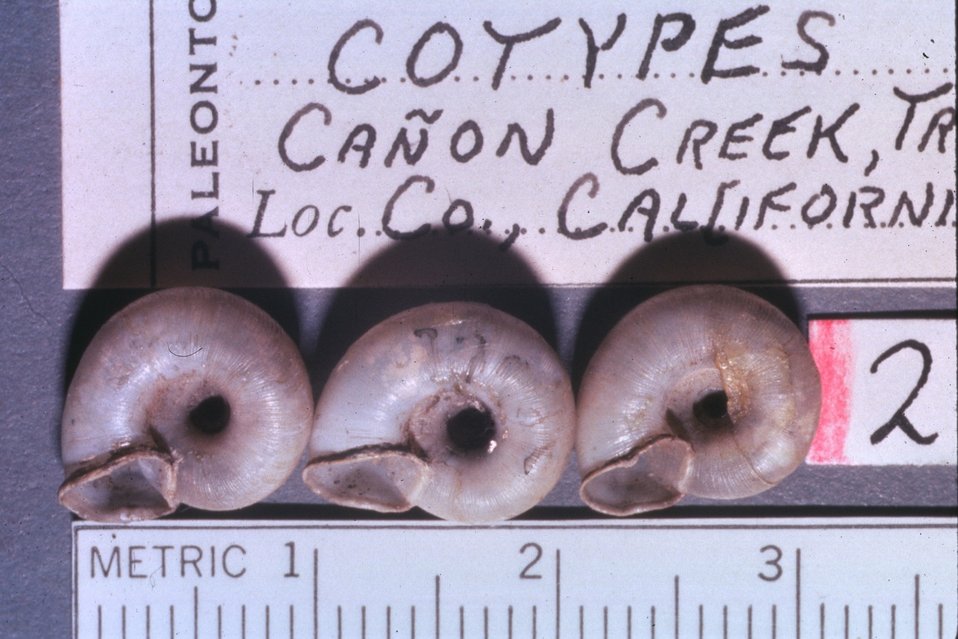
Hooded Lancetooth (Ancotrema voyanum), three specimens.